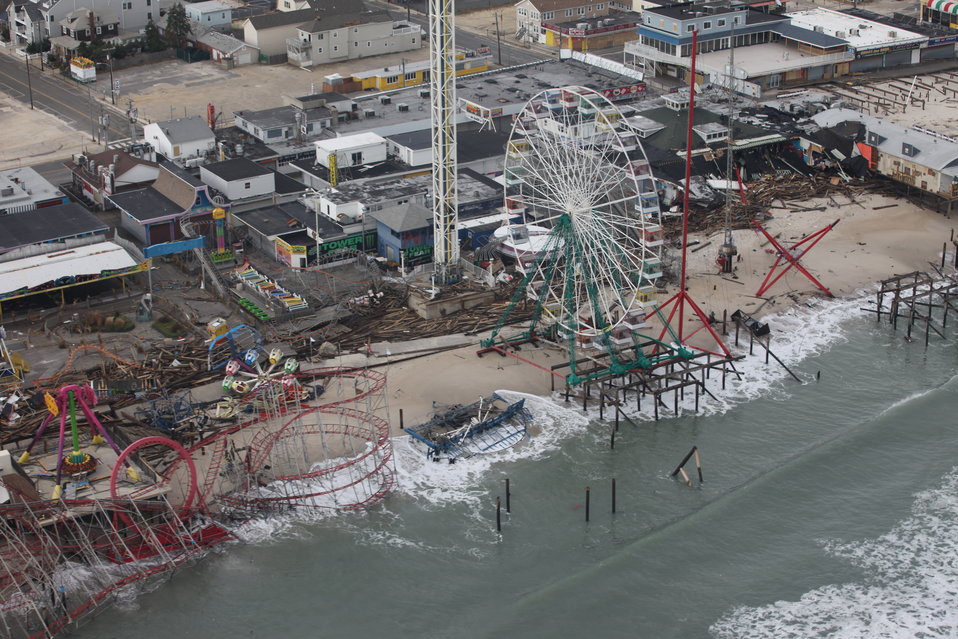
Damage to New Jersey shore amusement park

Aerial photo of Fun Town Pier amusement park after Hurricane Sandy.